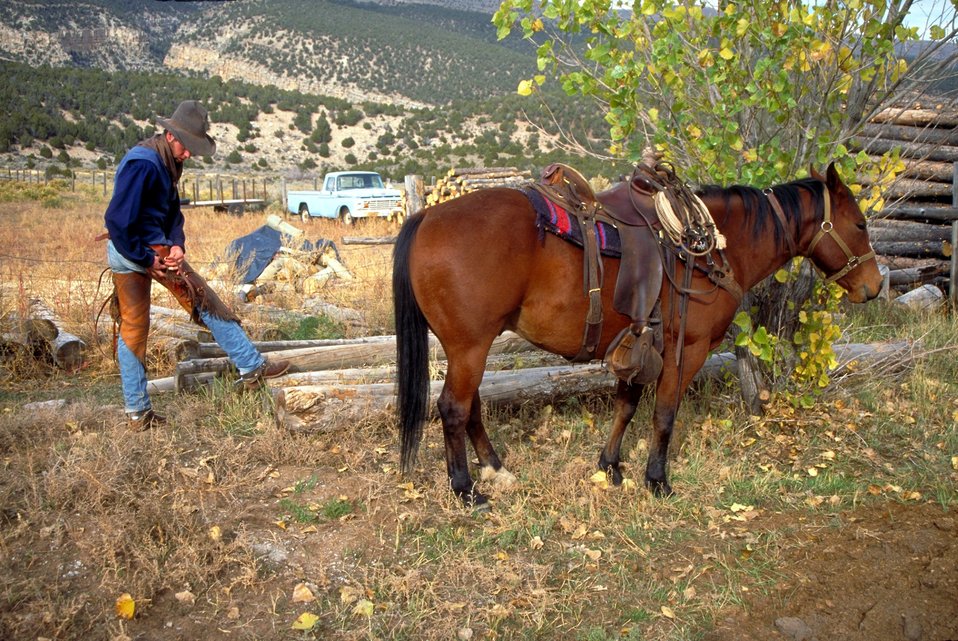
Working cowboys living near Vernal, Utah.